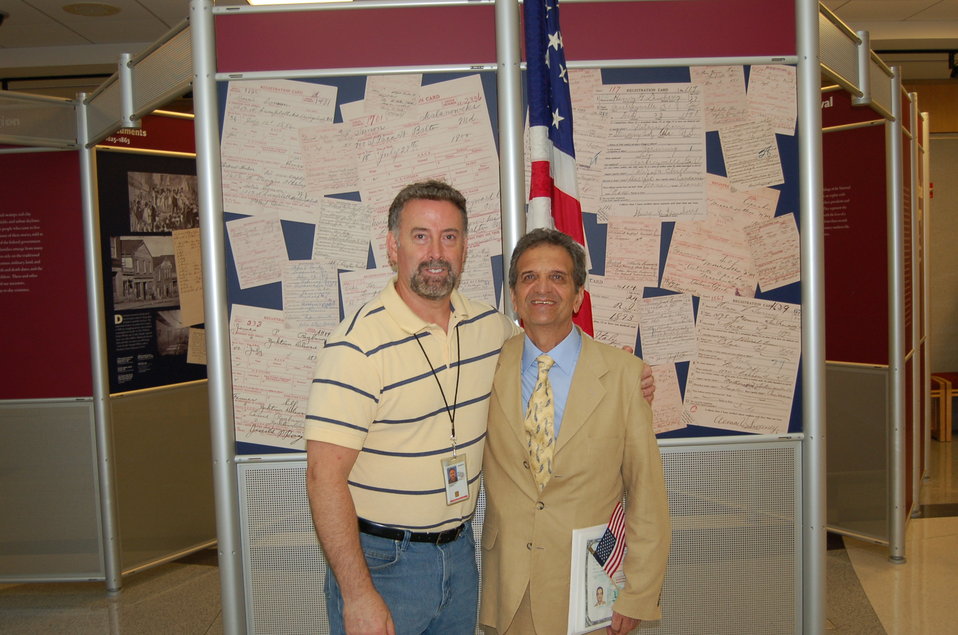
New Citizens